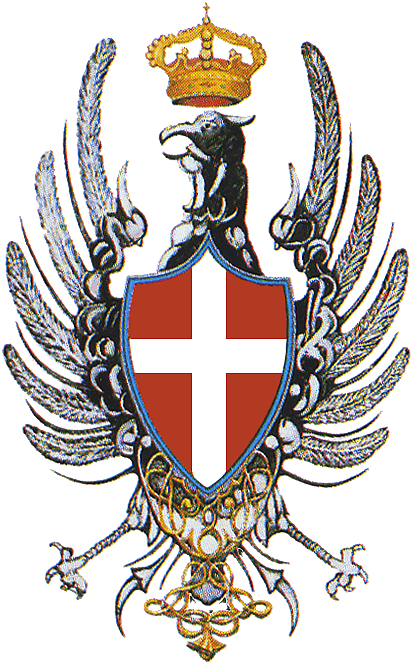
Italiano: emblema distintivo della Régia Aeronautica Italiana dal 29 aprile 1913 al 28 giugno 1915. distinctive coat of arms of the Royal Italian Air Force (Régia Aeronautica Italiana) from 29 April 1913 until 28 June 1915.